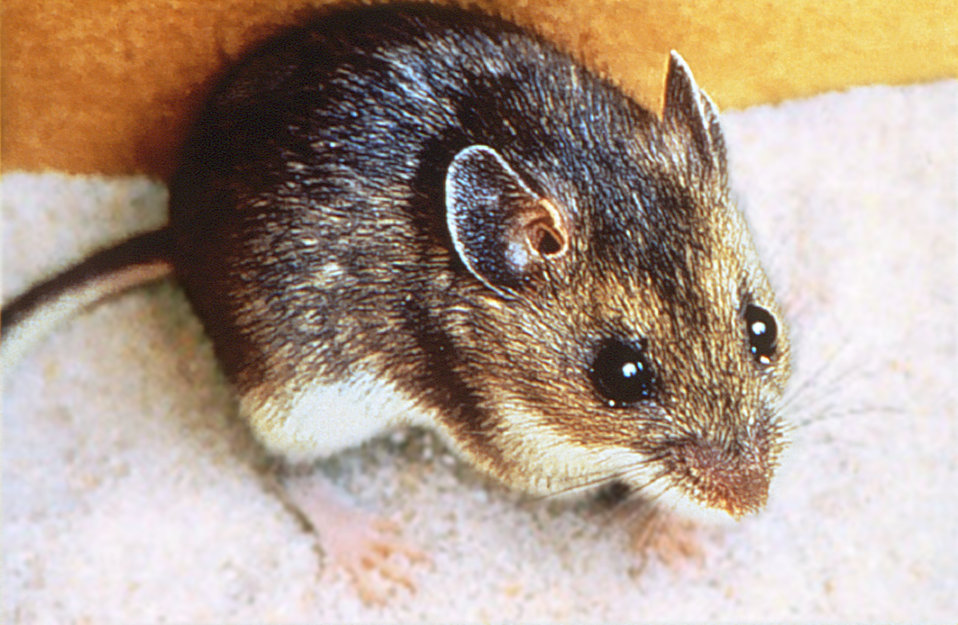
Deer mouse, Peromyscus maniculatus.